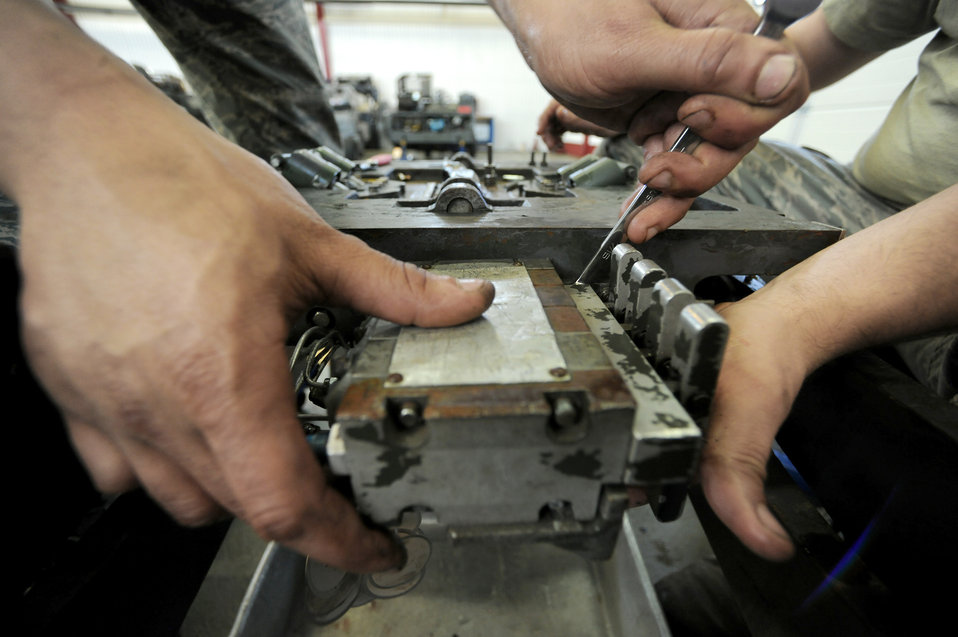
Working on a bomb lift

Airman 1st Class Gary Hutchison and Senior Airman Blake Skaggs remove bolts attaching a directional control valve to a bomb lift April 7, 2011, at Spangdahlem Air Base, Germany. Both Airmen are assigned to the 52nd Equipment Maintenance Squadron as aerospace ground equipment journeymen.